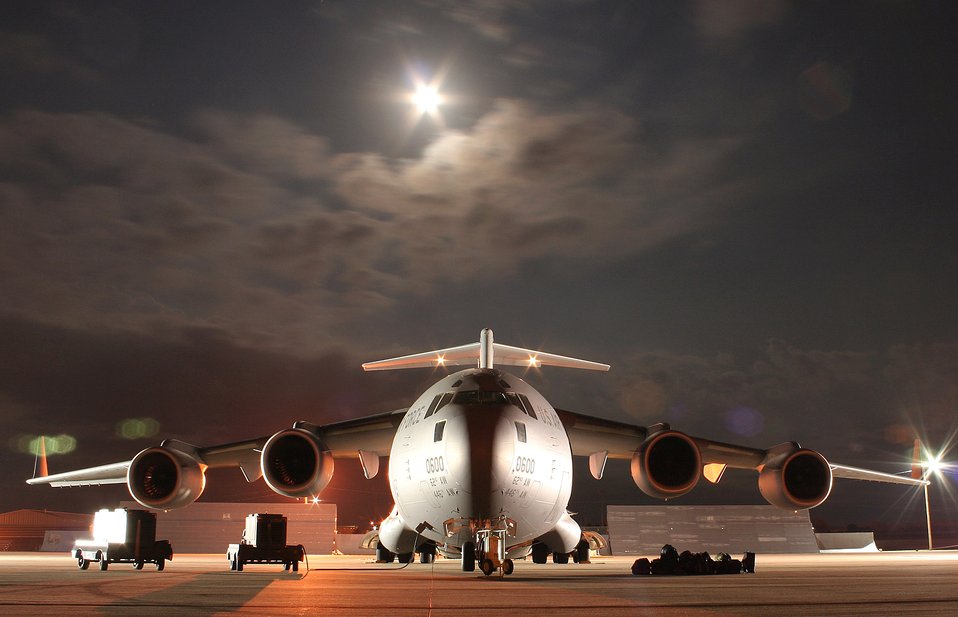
Mission by moonlight

A loaded C-17 Globemaster III from the 62nd Airlift Wing, McChord Air Force Base, Wash., rests on the tarmac at McConnell AFB, Kan., Nov. 4 before a mission to Southwest Asia.